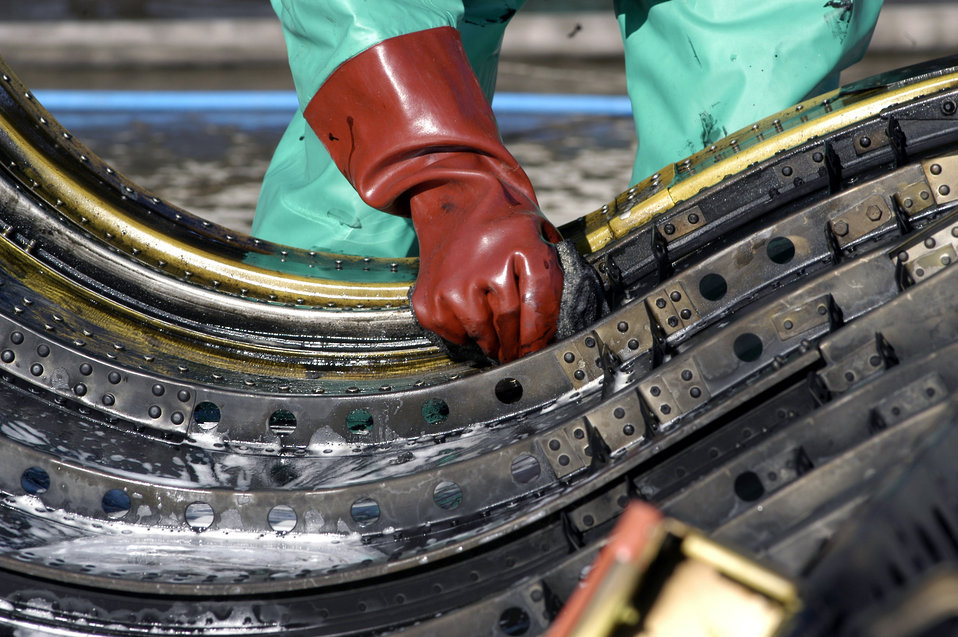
Wash rack

OPERATION IRAQI FREEDOM -- Airman 1st Class Clint Kruetzbender washes the inside of a B-52 engine cowling April 7 at this forward-deployed location. Kruetzbender was one of about a dozen maintainers washing the Buff after 300 hours of flying. The Buff entered the first part of a